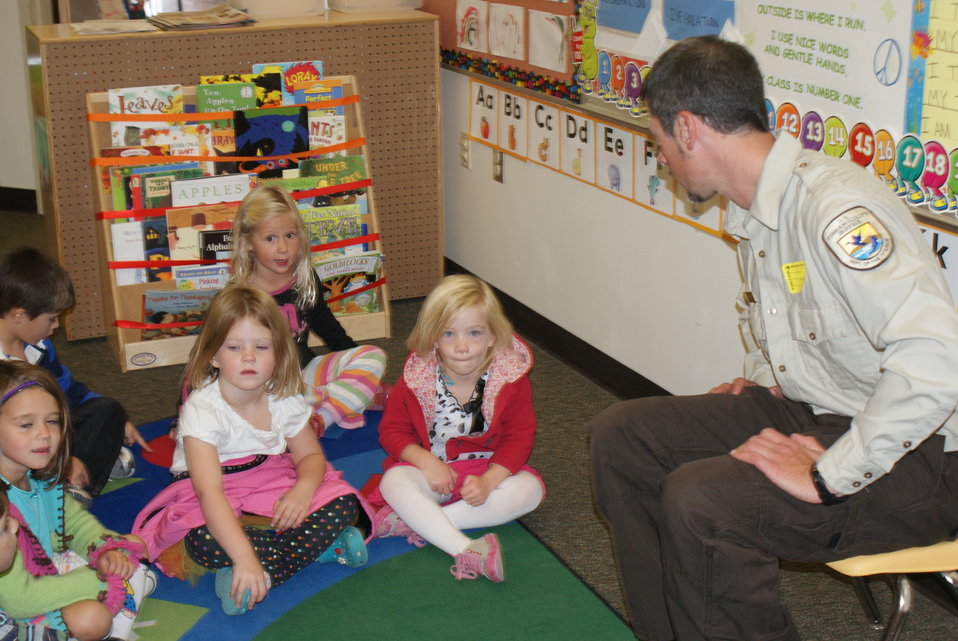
Scientists in the Community Program

U.S. Fish and Wildlife Service Mountain-Prairie Region Deputy ARD for External Affairs, Matt Kales, introduces early childhood education students at William Roberts Elementary School in Denver to some of Colorado's native and historic wildlife species.